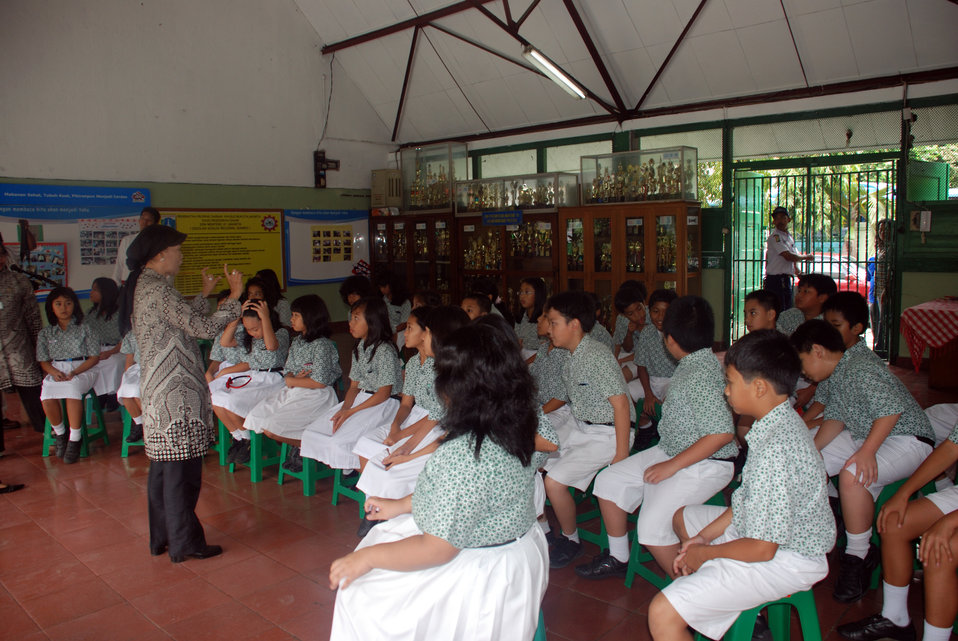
Behind the Scenes: Indonesian Students Prepare for Secretary Clinton's Arrival

Principal Hasimah speaks to the students of Menteng Elementary School
No. 1 in Jarkarta, Indonesia during the visit of U.S. Secretary of State Hillary Rodham Clinton February 18, 2009.